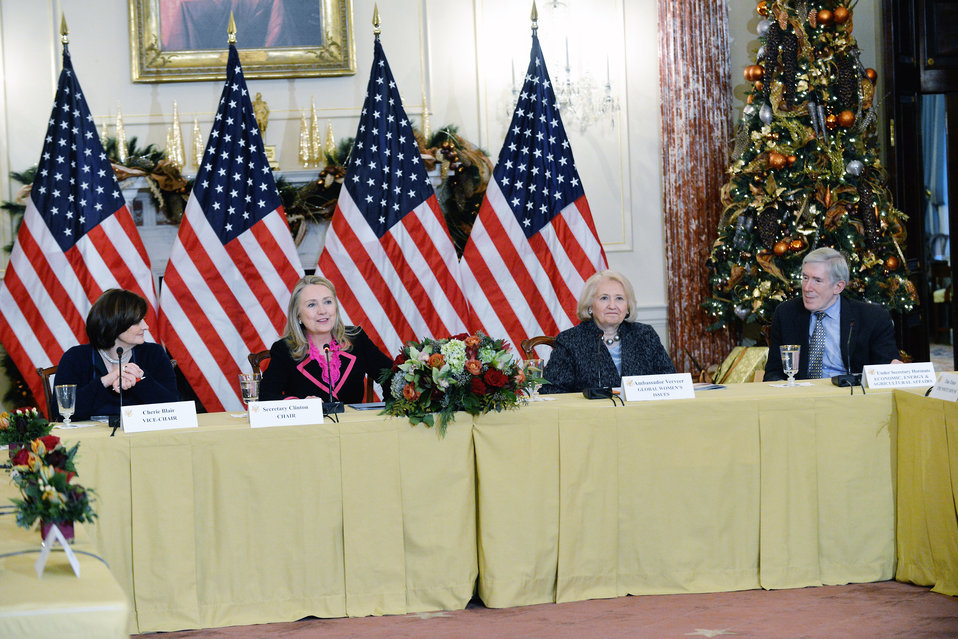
Secretary Clinton Hosts the International Council on Women's Business Leadership

U.S. Secretary of State Hillary Rodham Clinton hosts the second meeting of the International Council on Women’s Business Leadership at the U.S. Department of State in Washington, D.C., November 27, 2012.